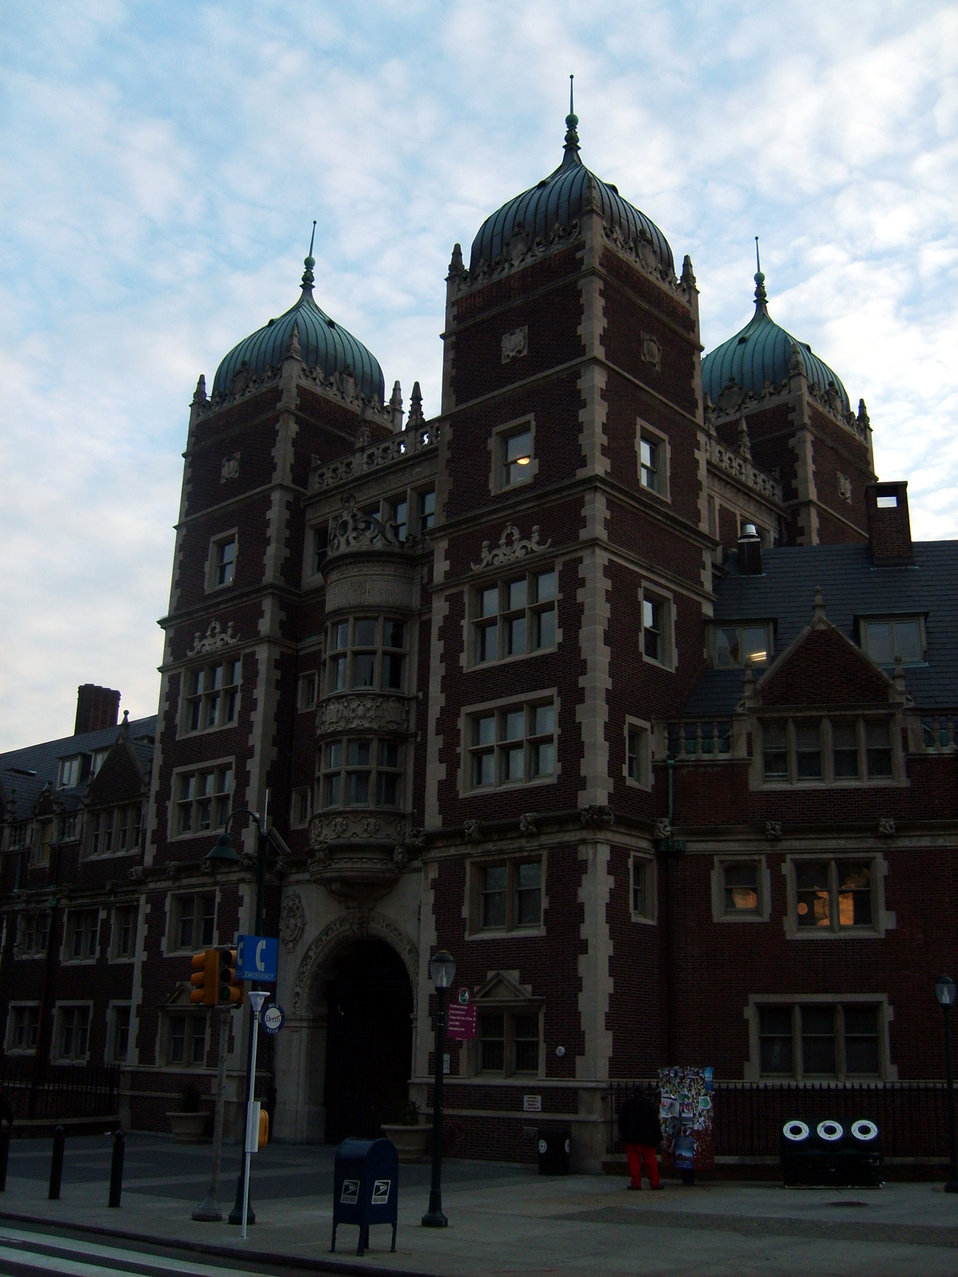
free to use